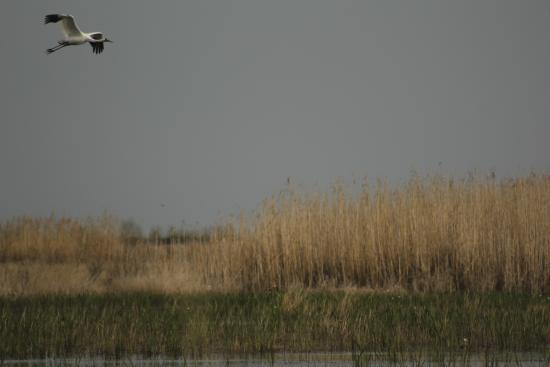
Whooping crane in flight in Louisiana.